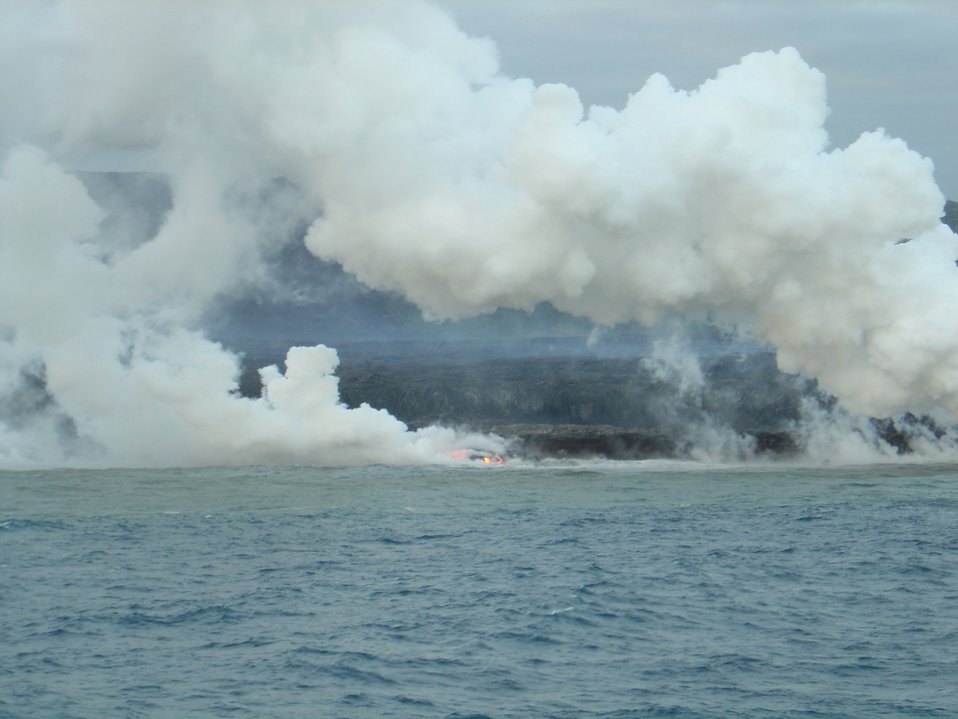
Lava flow entering the sea on SE coast of Hawaii.